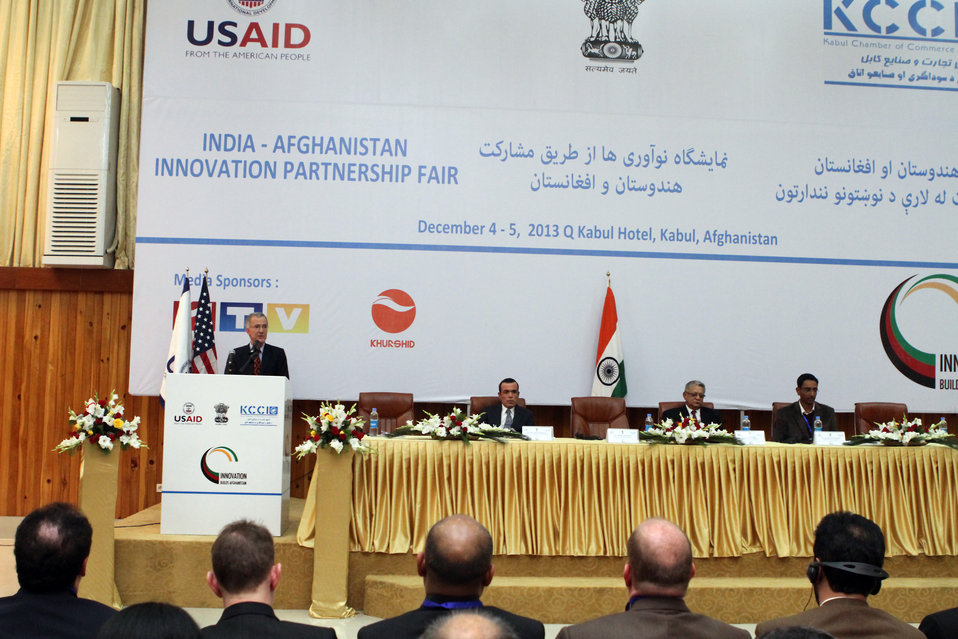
USAID Mission Director William Hammink during India-Afghanistan Innovation Partnership Fair in Kabul.